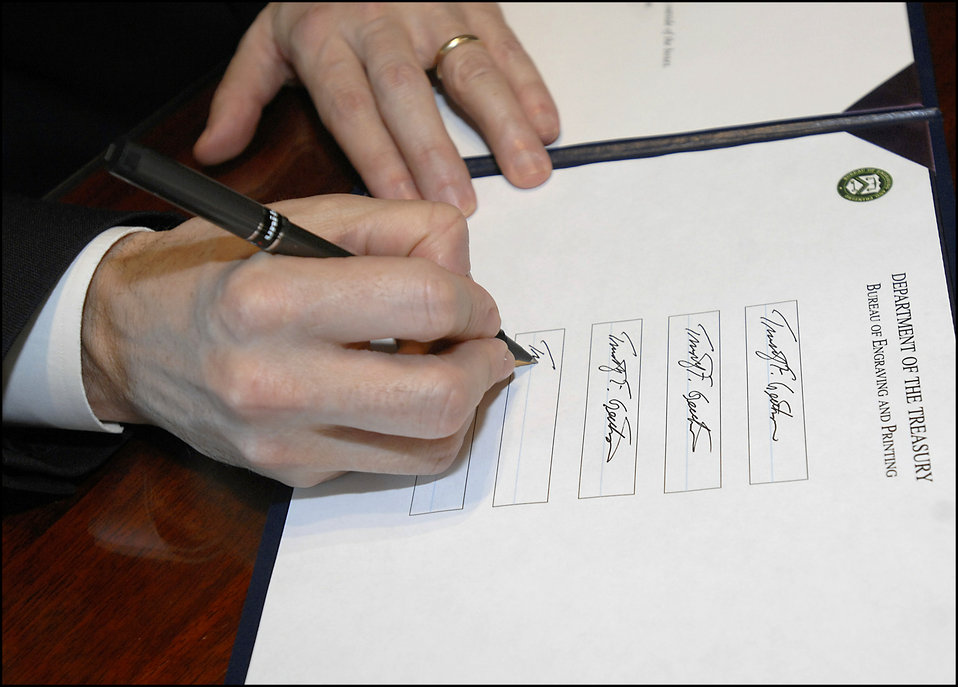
Geithner Signing